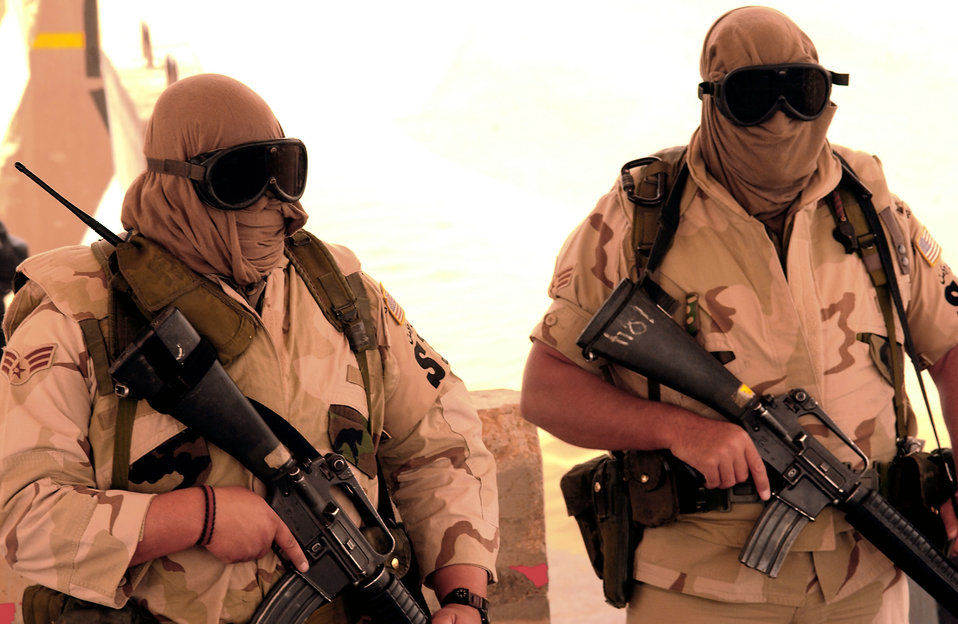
Masked men

OPERATION IRAQI FREEDOM -- Senior Airman Greg Pelletier and Senior Airman Phil Soares, both security forces journeyman deployed from the 157th Security Forces Squadron, Pease Air National Guard Station, N.H., to the 363rd Expeditionary Security Forces Squadron, authorize a vehicle to proceed through an entry control point during a sand storm on April 7.